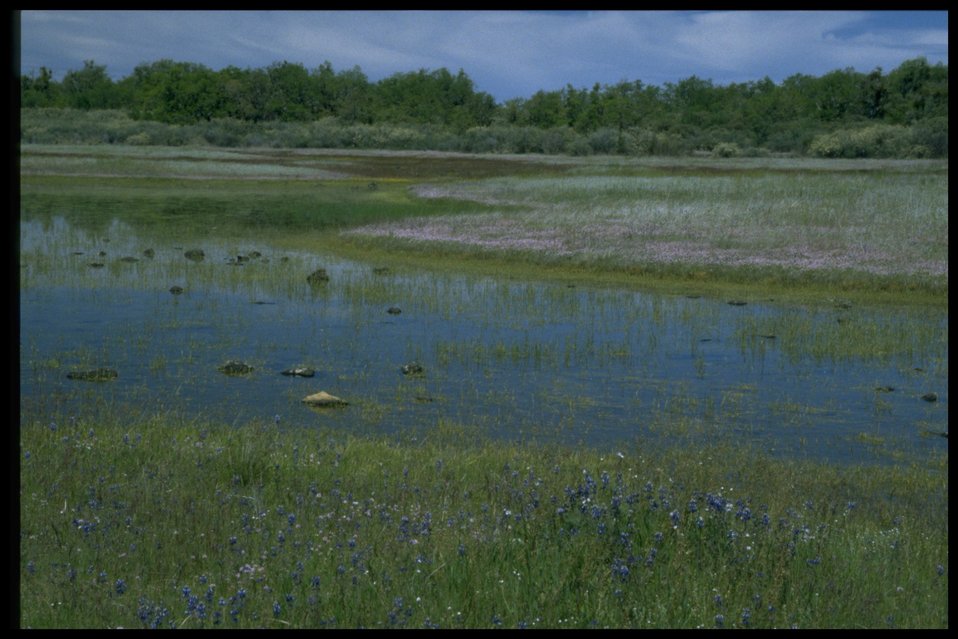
Scenic view of vernal pool, Plagiobothrys, Lupine, Plectritis congesta, Lasthenia californica.